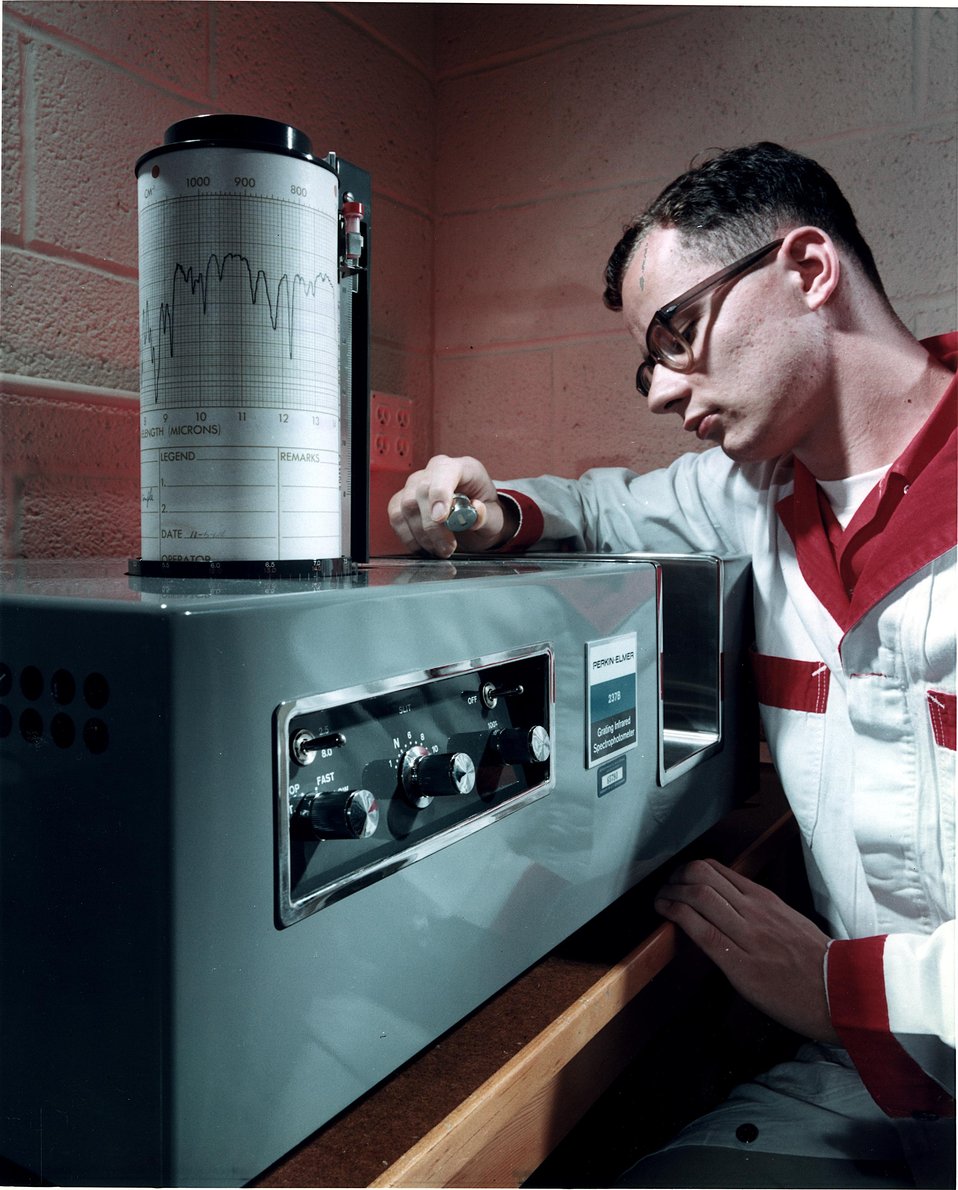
A summer student is using an infra-red spectrometer to confirm the structure of a compound. c. 1966